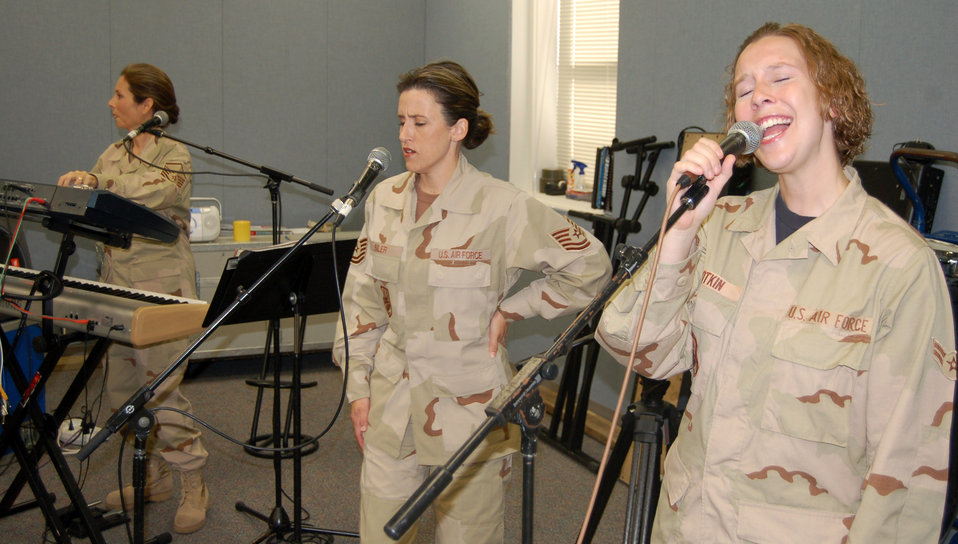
AF band targets forward bases for morale shows

Vocalists Airman 1st Class Melissa Plotkin (front) and Tech. Sgt. Donna Siler sing with vocalist-keyboardist Master Sgt. Sarah Deluzio during a rehearsal Oct. 4. They are with the Air Force Band of the West's Top Flight rock band at Lackland Air Force Base, Texas. The band will be deploying soon to Southwest Asia.